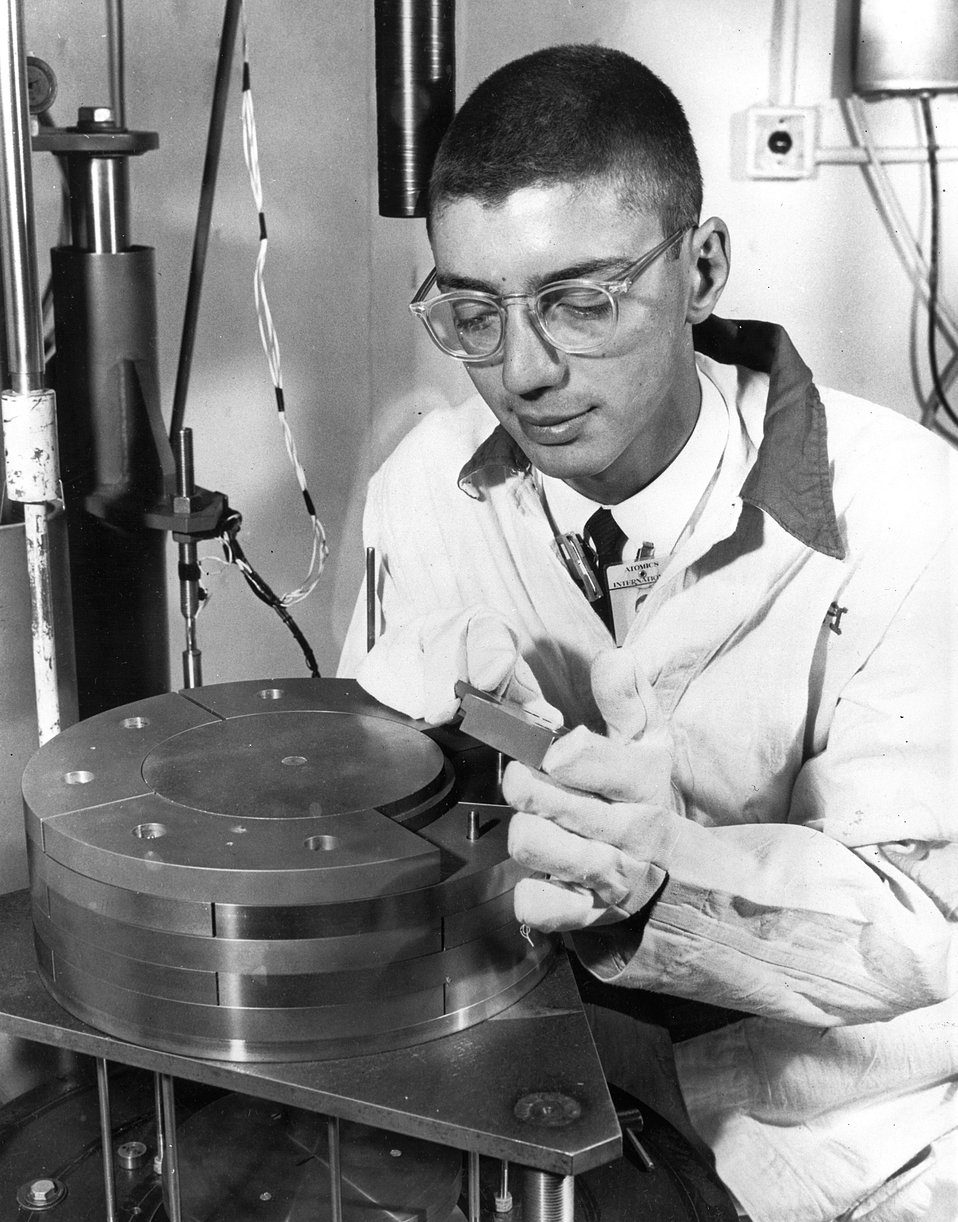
An atomic International scientist examines a section of the fuel element for the SNAP 10 nuclear reactor.